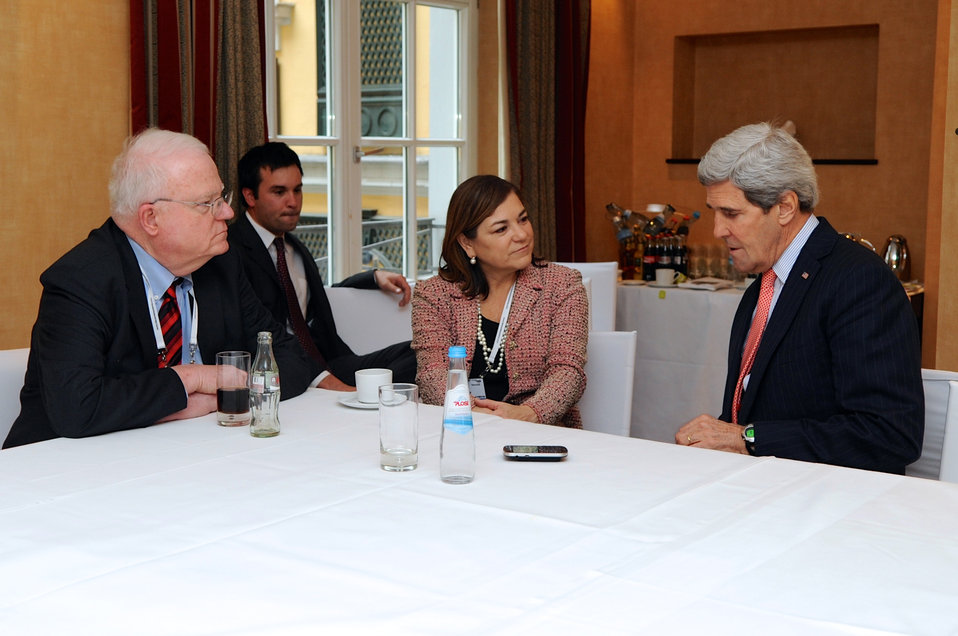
Secretary Kerry Chats With Representatives Sensenbrenner and Sanchez at Munich Security Conference

U.S. Secretary of State John Kerry chats with U.S. Representatives James Sensenbrenner of Wisconsin and Loretta Sanchez of California before briefing a congressional delegation that attended the Munich Security Conference in Munich, Germany, on February 2, 2014.